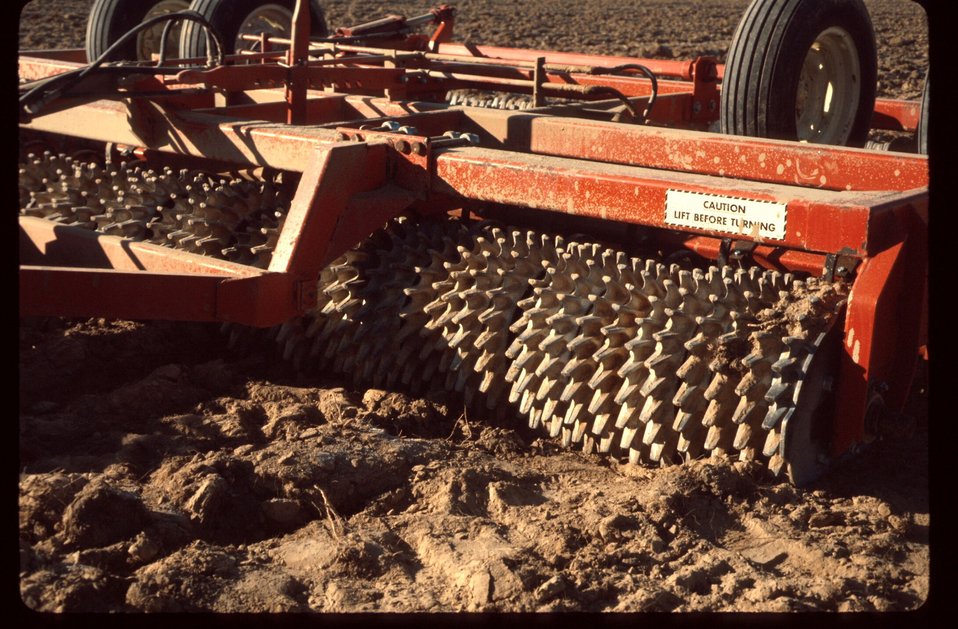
Cultpack Plowed silt Range Restoration Project